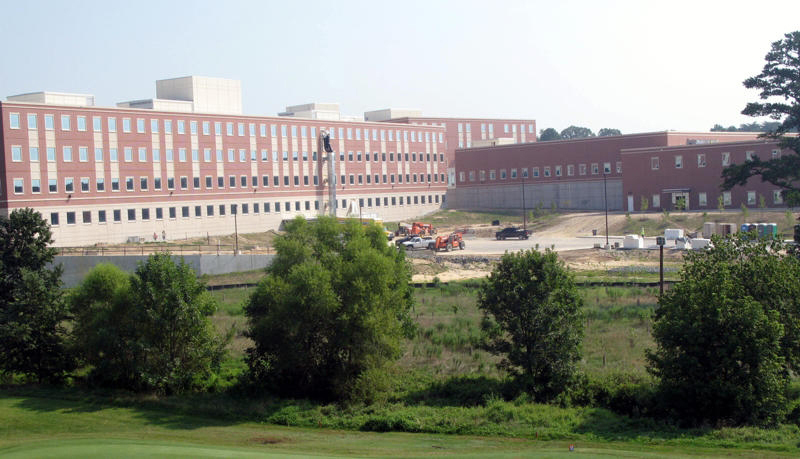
Realignment, closure plan continues on track

A sprawling new building under construction at Fort Meade, Md., will accommodate almost 4,300 Defense Information Systems Agency employees who will relocate no later than September 2011 under the Base Realignment and Closure Commission mandate.